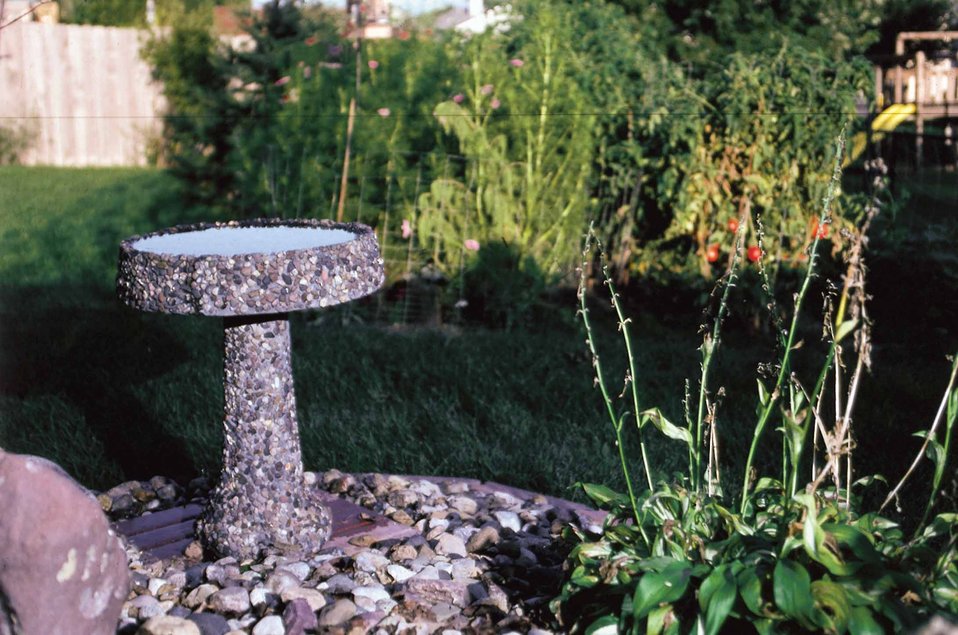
Birdbath in a back yard.